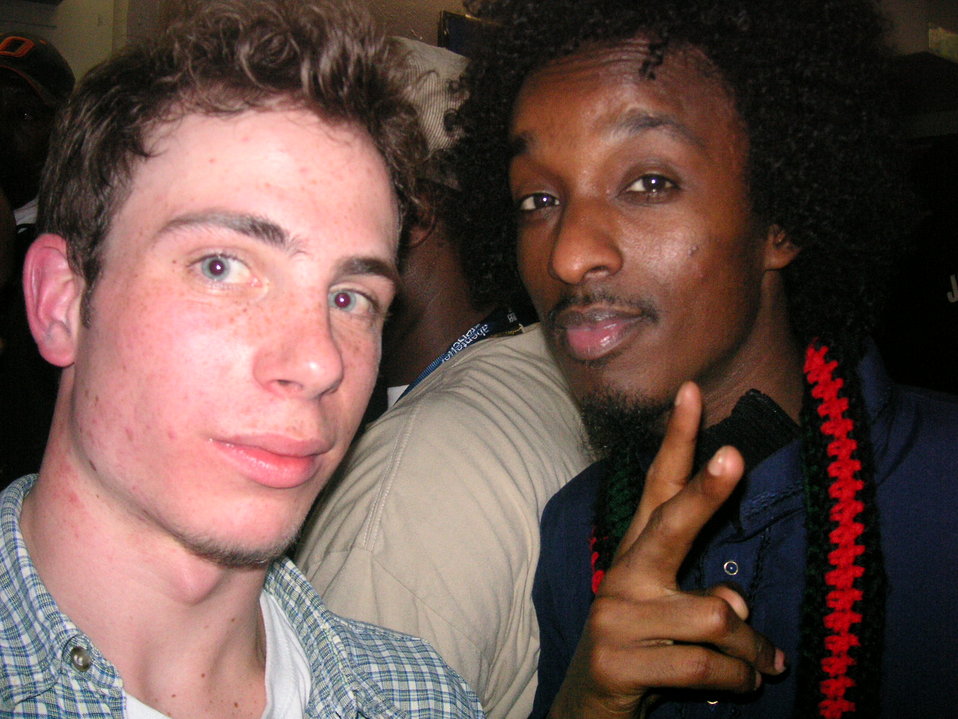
Deutsch: Damian Marley 06